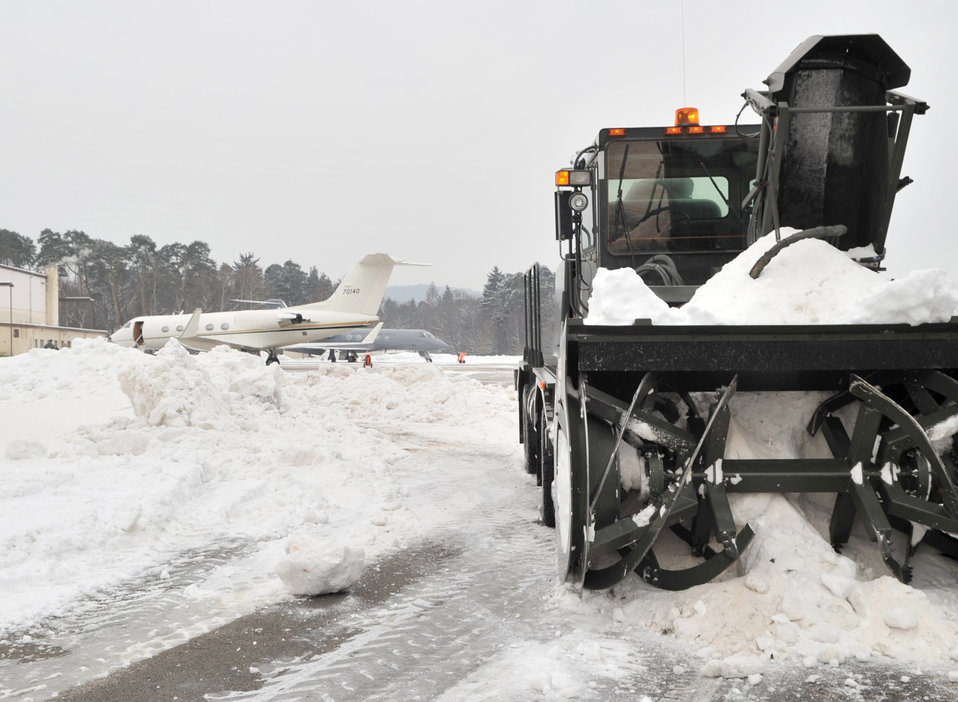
It snows in the West

Snow removal crews with the 786th Civil Engineer Squadron clear the runway Dec. 28, 2010, at Ramstein Air Base, Germany. The 786th CES works with airfield management to help keep the runways clear for mission readiness throughout the winter months.